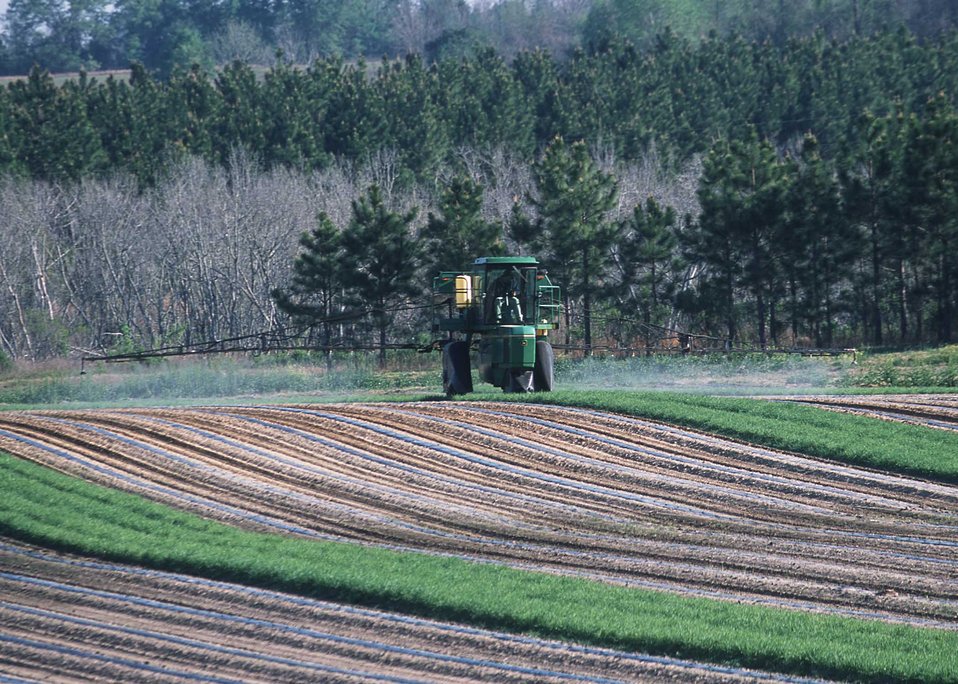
Farmer spraying pesticide as part of pest management plan. Georgia.